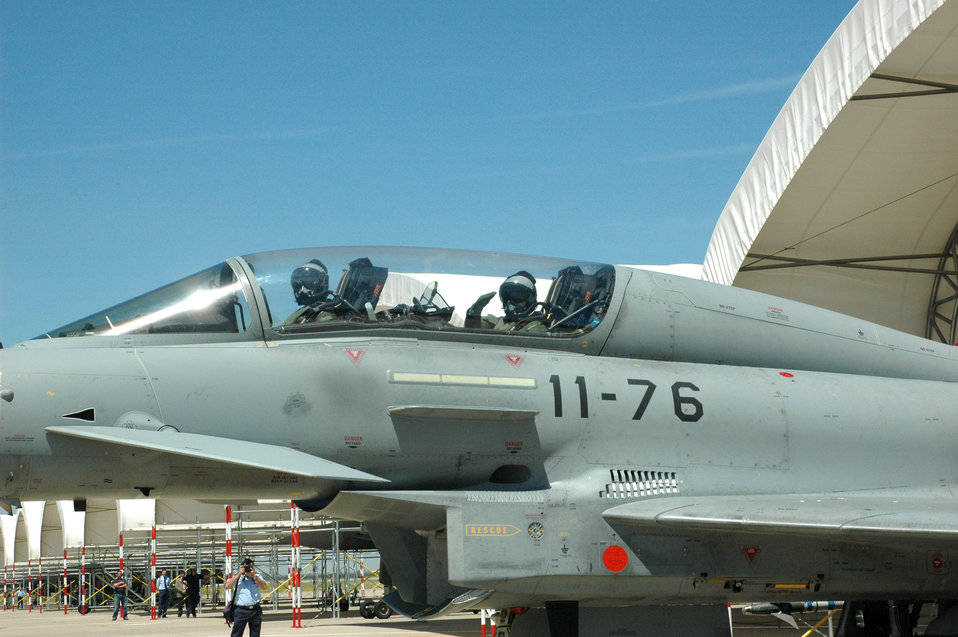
USAFE commander visits Spanish base

Gen. William T. Hobbins receives a three-ship orientation flight in a Spanish EF-2000 Eurofighter May 11 at Moron Air Base, Spain. During his trip, General Hobbins toured the 11th Combat Wing and visited with Spanish air force members to discuss NATO and U.S. Air Forces in Europe topics, as well as met with leadership from the 712th Air Base Group. General Hobbins is the USAFE commander.